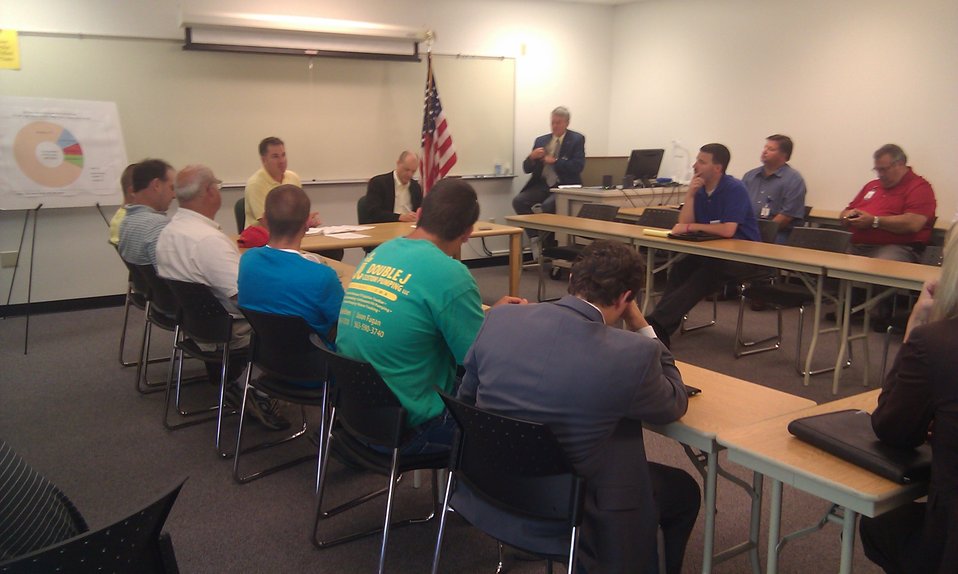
Farm Bill Roundtable July 2, 2012

Iowa Congressman Bruce Braley (yellow shirt) and Agriculture Rural Development (RD) Deputy Under Secretary Doug O'Brien (next to flag) meet with Iowa producers and residents in Northeast Iowa on Monday, July 2, 2012 to discuss the impact of the next farm, food and jobs bill could have on rural economies.